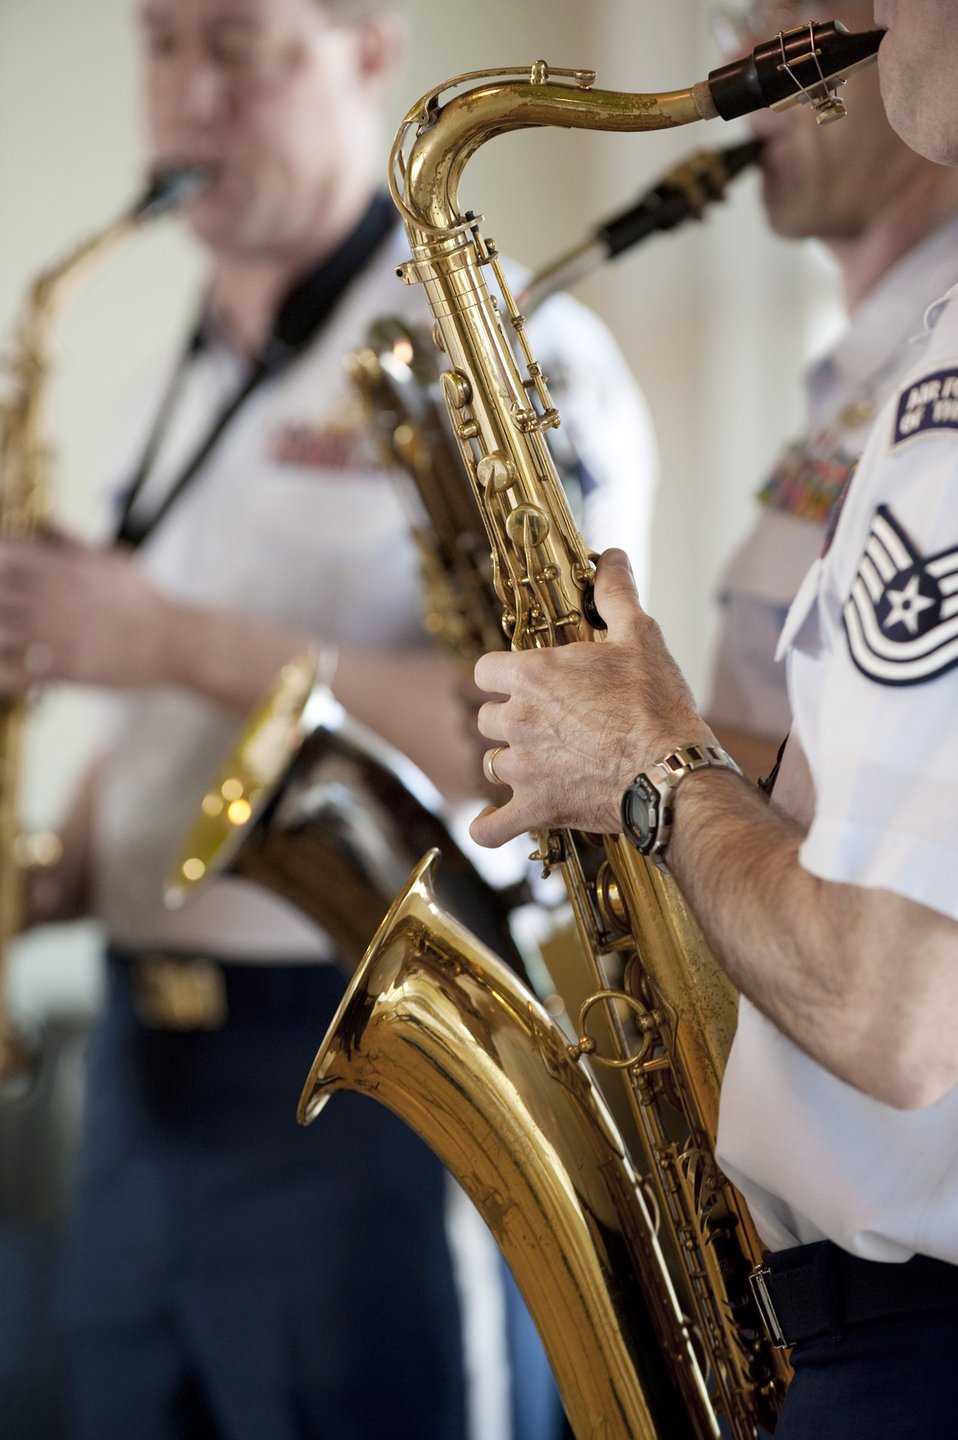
Getting jazzy

The Pacific Air Forces show band, the Greatlanders, performs at Seishin-kai Hospital near Misawa Air Base, Japan, Oct. 17, 2009. The Greatlanders visited the base during their tour of Eastern Asia.